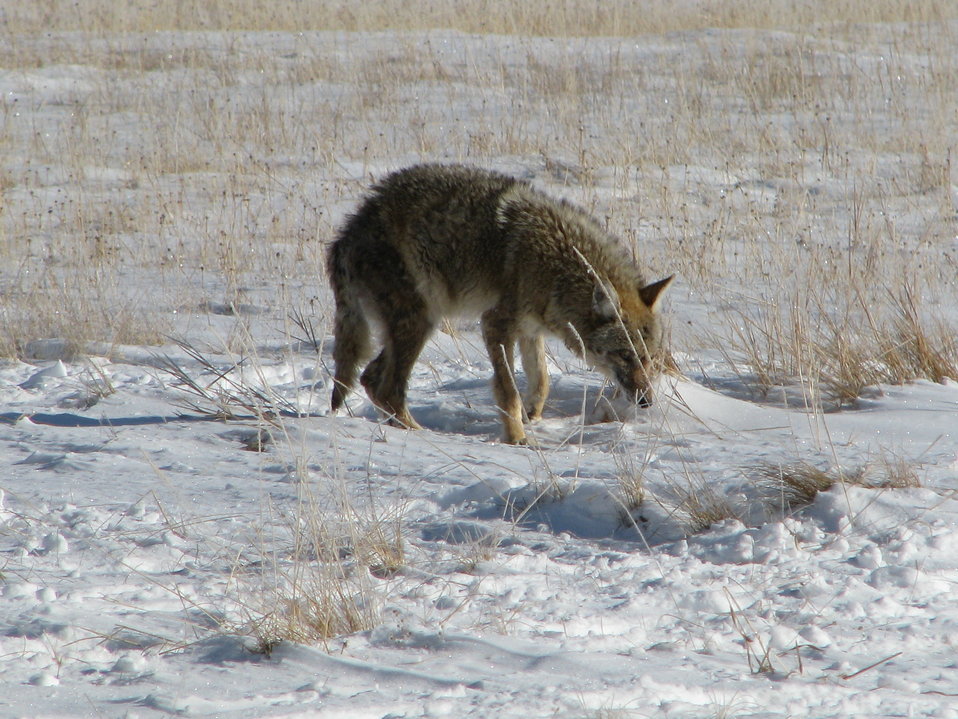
A Keen Sense of Smell

A coyote stops to investigate a scent as it crosses through an area of wintering elk.

Credit: Lori iverson / USFWS